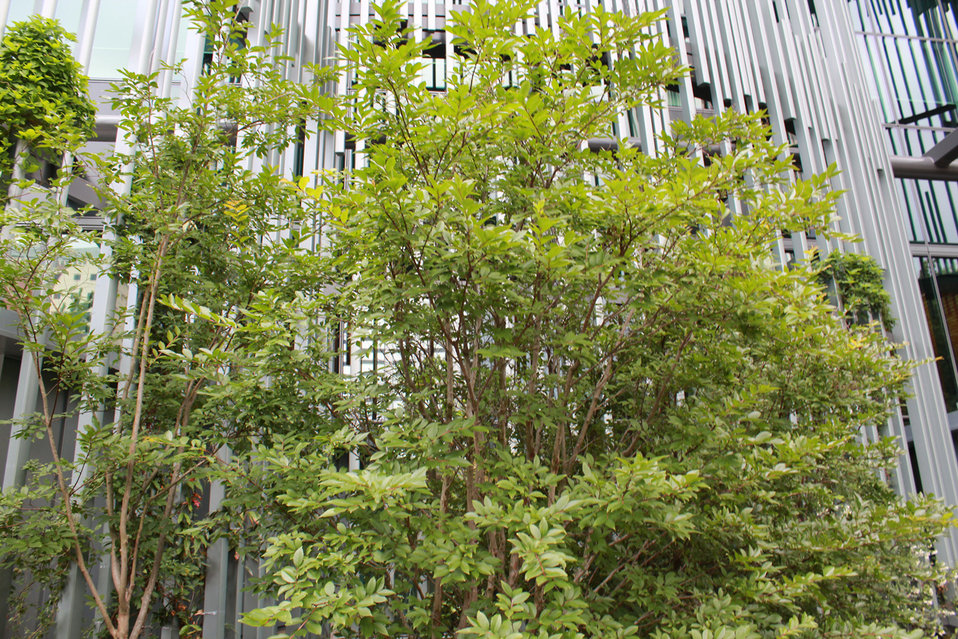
This is an image of the U.S. Department of Agriculture (USDA) U.S. Forest Servcie research facility in Portland, OR.